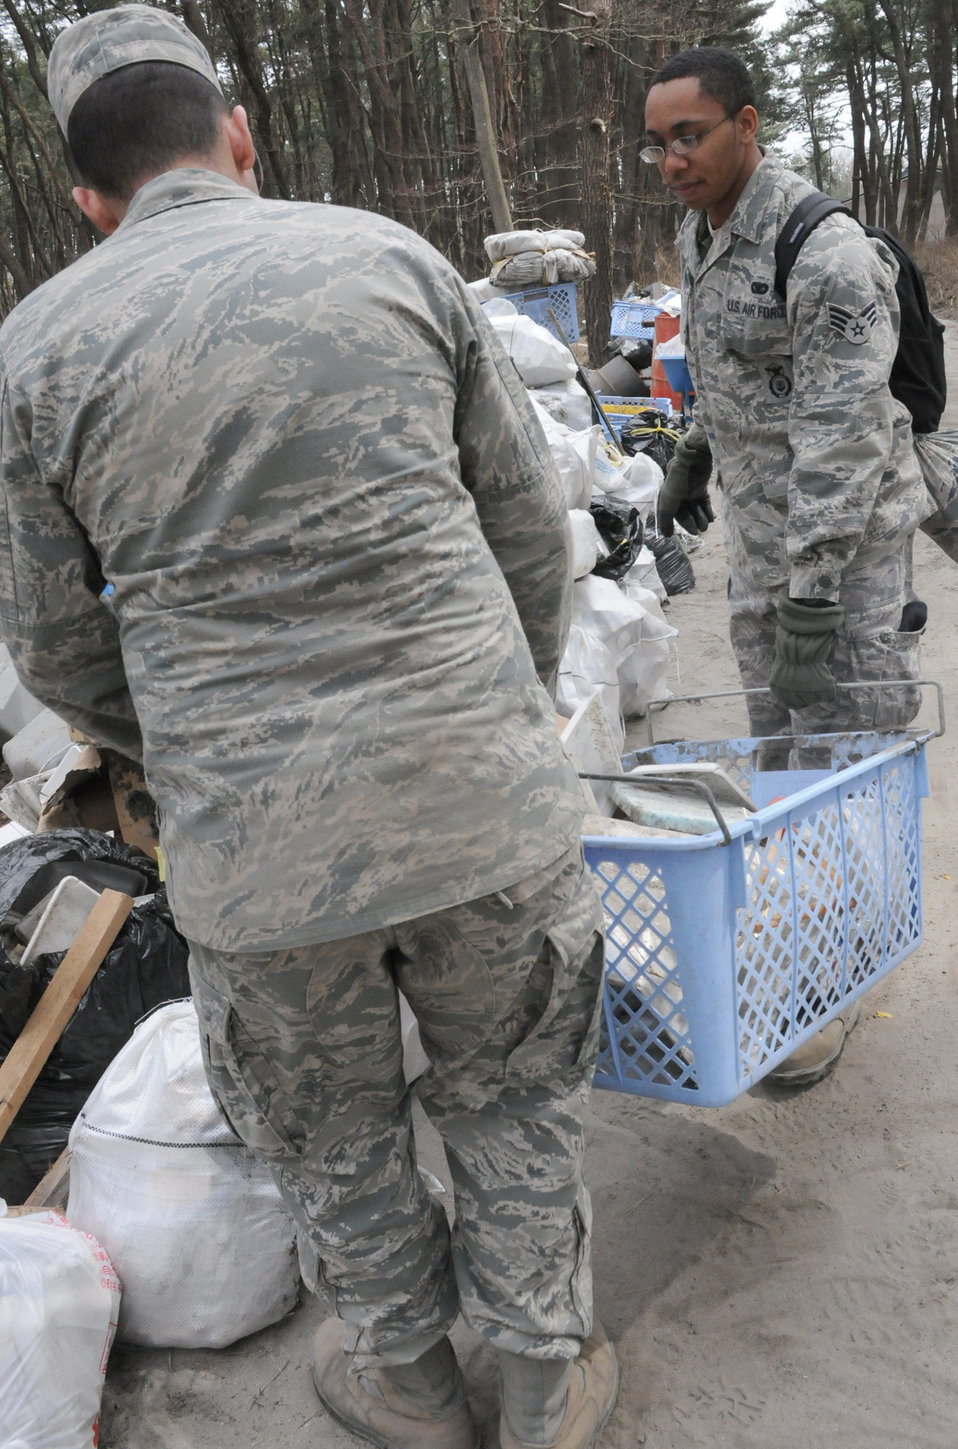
Misawa Airmen continue relief efforts

Two Airmen carry debris to a collection point April 7, 2011, during a humanitarian relief mission in Hachinohe, Japan. The Airmen are assigned to the 35th Security Forces Squadron at Misawa Air Base, Japan.